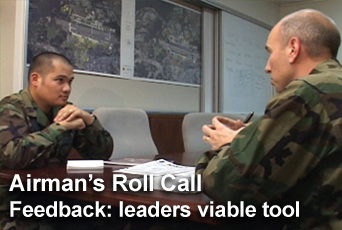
Airman's Roll Call

This week's Airman's Roll Call focuses on feedback and assessment of Airmen performance.